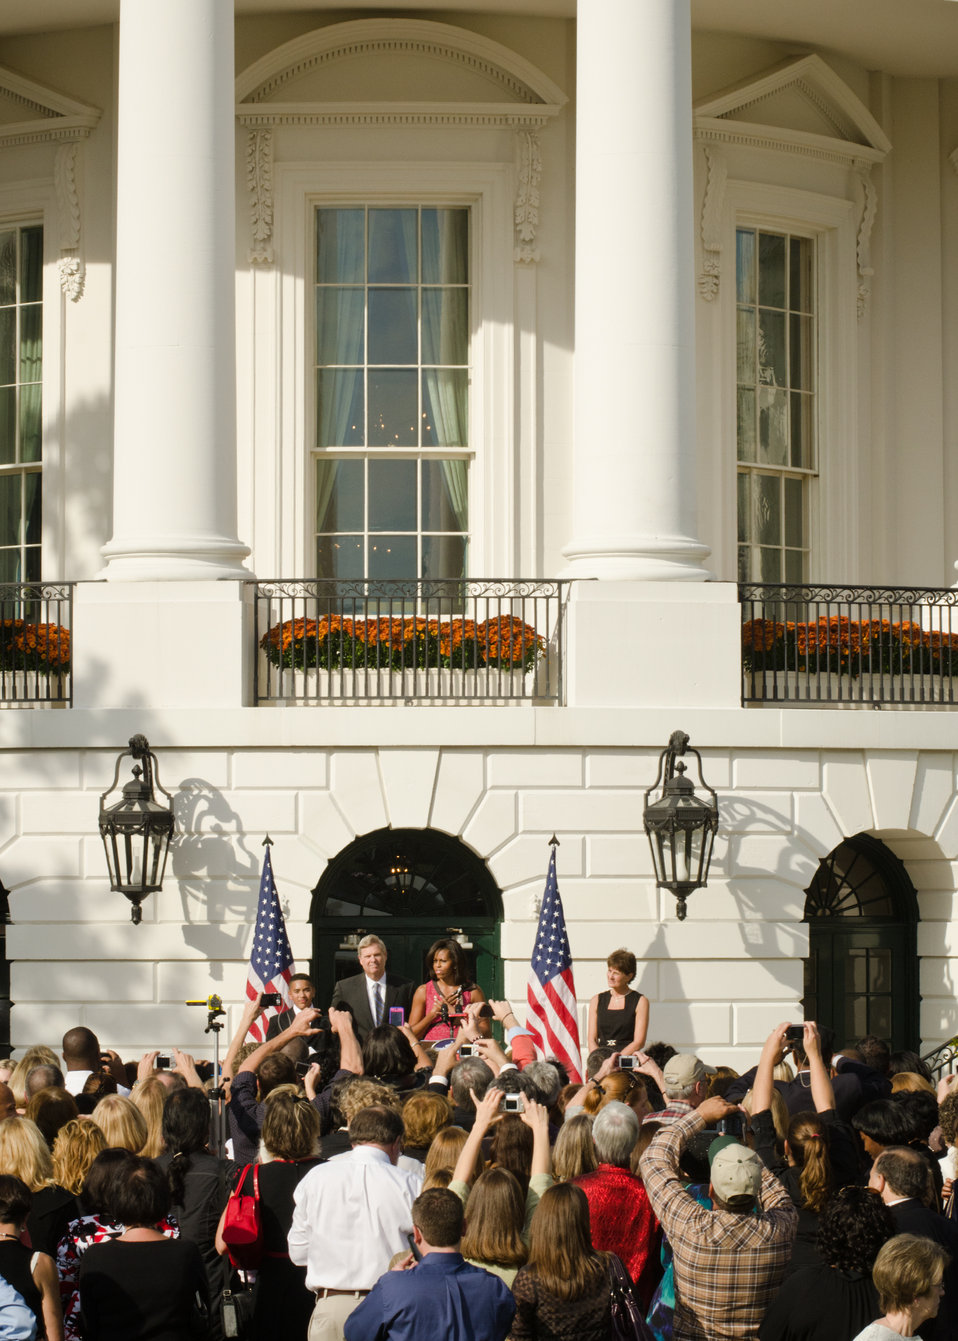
From left: Alex Roman, Walsh Elementary School, Chicago, Illinois, Agriculture Secretary Tom Vilsack, First Lady Michelle Obama and Becky Bounds, Lamar County Schools, Mississippi. Agriculture Secretary Tom Vilsack and First Lady Michelle Obama hosted a reception on the South Lawn of the White House in Washington, DC, Monday, October 17, 2011 to honor the over 1200 winners in the HealthierUS Schools Challenge that met the First Lady’s goal to double the number of participants in the HealthierUS School Challenge in a year. In February 2010, First Lady Michelle Obama introduced “Let’s Move” incorporating the HealthierUS School Challenge into her campaign to promote a healthier generation of children. The HealthierUS School Challenge recognizes elementary, middle and high schools nationwide that create healthier school environments by providing exceptional nutrition education, nutritious food and beverage choices, physical education and opportunities for physical activity. Since the beginning of the HealthierUS School Challenge in 2004, awards have been given to schools in 44 states. As of September 28, 2011, there are 1631 schools certified. A tool kit on how to become a Healthier U.S. School can be found at www.fns.gov.